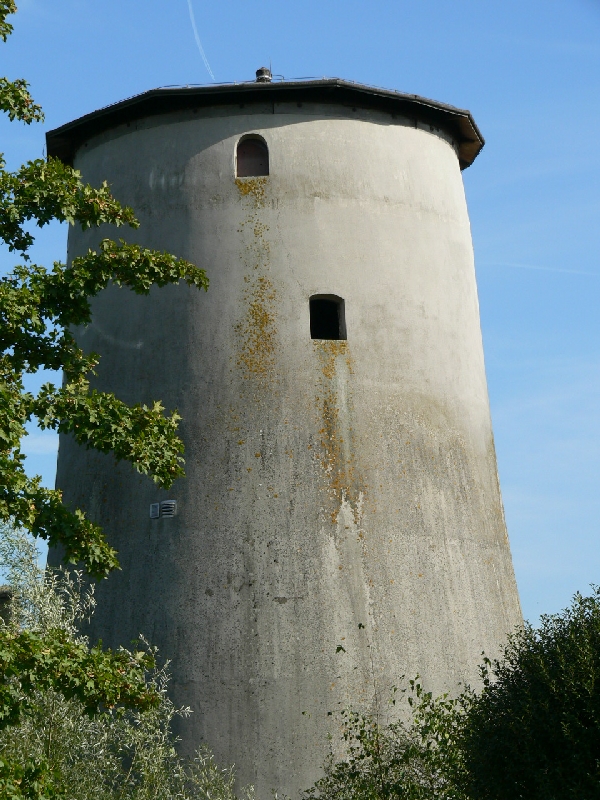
Babbersmolen langs de Poldervaart in Schiedam